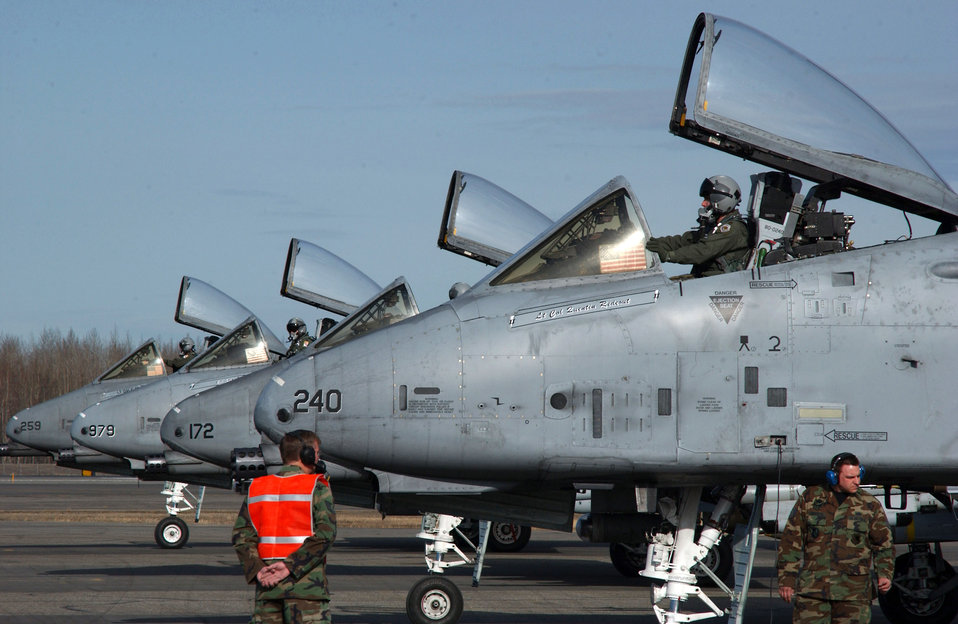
Alaska A-10s are goin' to Georgia

Four A-10 Thunderbolt IIs with the 355th Fighter Squadron are parked in position at the end of runway to be armed by Airmen from the 354th Aircraft Maintenance Squadron on April 24 at Eielson Air Force Base, Alaska. Due to the Base Realignment and Closure list the A-10 Thunderbolt II is being relocated to Moody AFB, Ga.